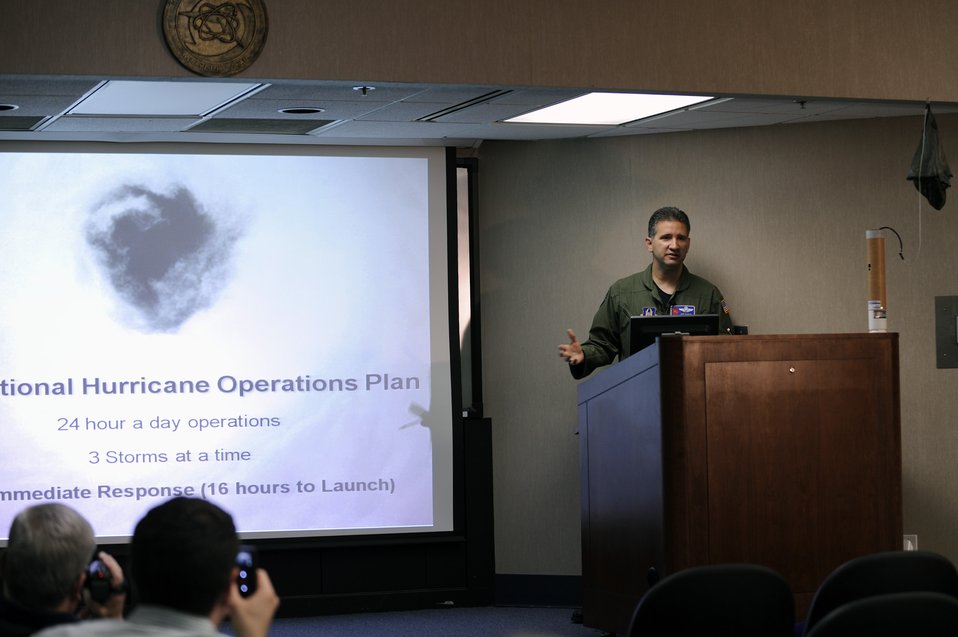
Bloggers Flight with the Hurricane Hunters

A first for the Air Force, military bloggers were invited to fly with the 53rd Weather Reconnaissance Squadron in a WC-130J